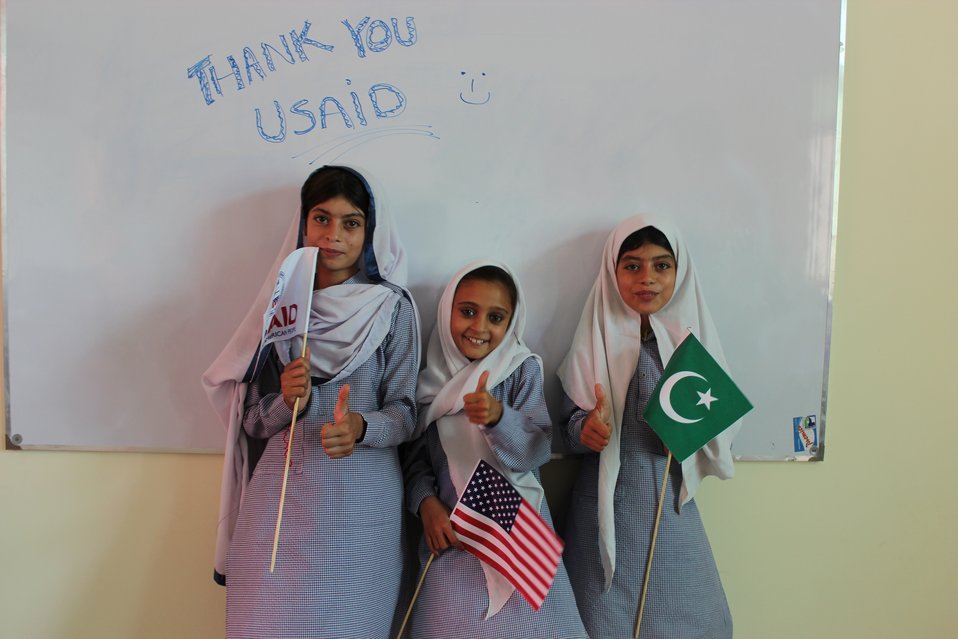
School girls in a classroom

Sept 06, 2012 : Construction (first and second floor) of Tameer-e-Millat Model School for Girls (TMMSG) in village Latwal, of Tehsil Fateh Jhang has been completed and on Sept 06, 2012 Project closing and School opening ceremony was held in which students, teachers, parents and community leaders participated.